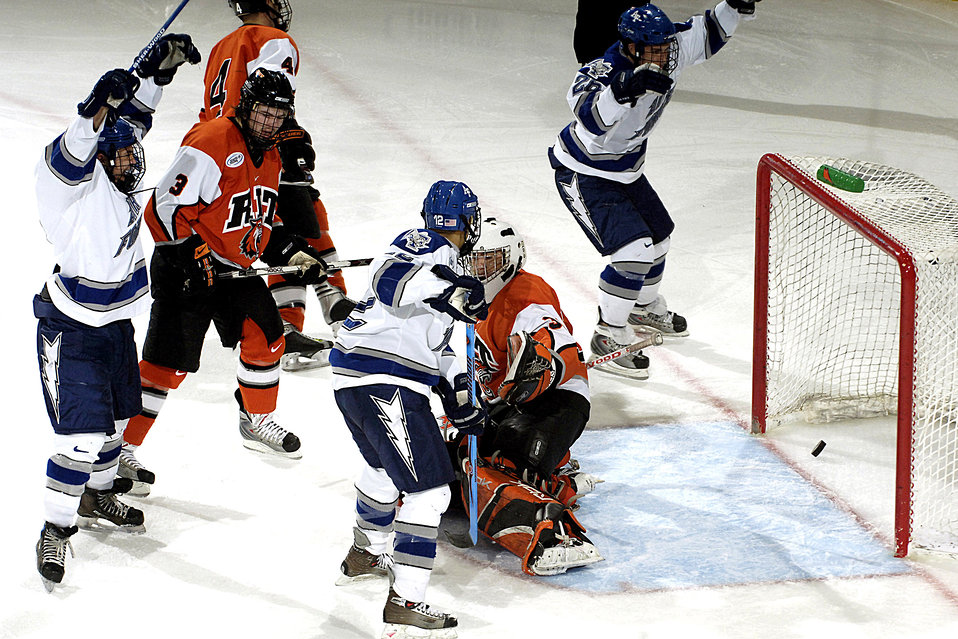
Falcons defeaft Rochester Institute of Technology

Victorious hands go up as the U.S. Air Force Academy hockey team scores a goal against Rochester Institute of Technology Jan. 11 in the Cadet Ice Arena at Colorado Springs, Colo. The Academy defeated RIT 5-2 in an Atlantic Hockey Association game.